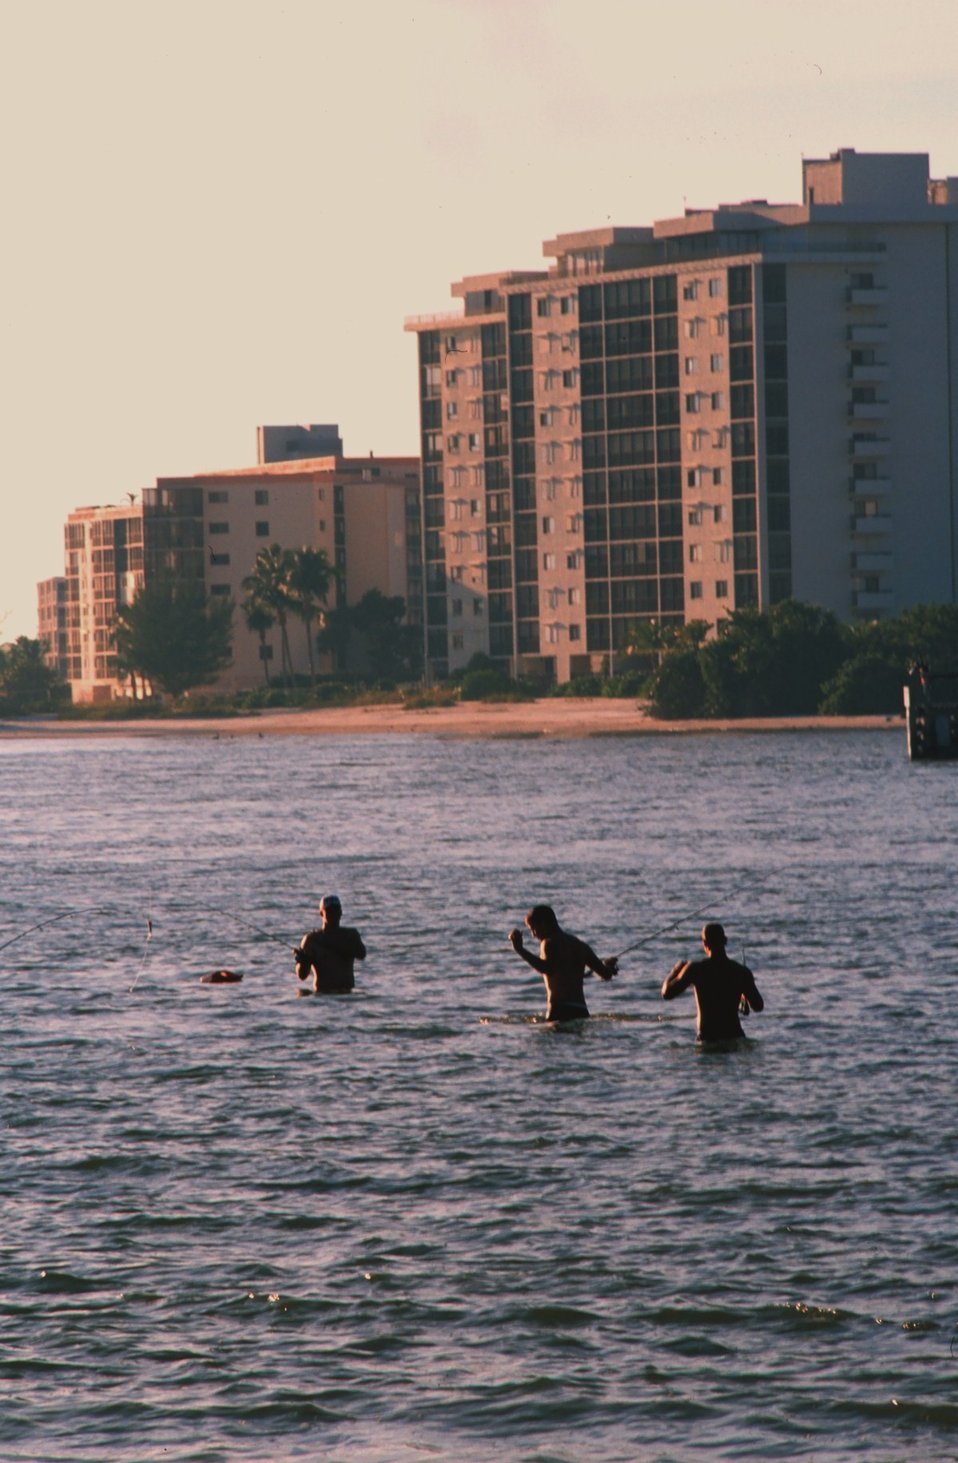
Wading fishermen near Lovers Key